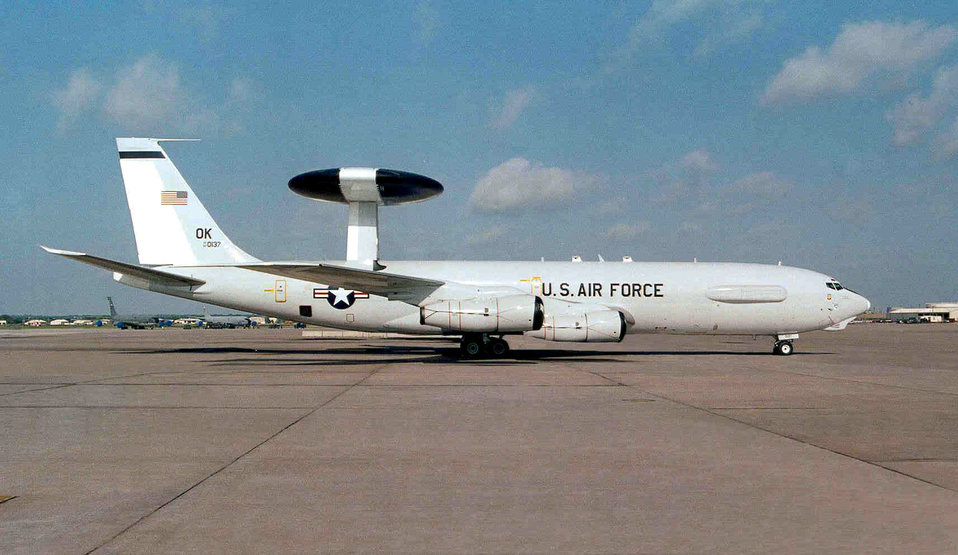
E-3 Sentry

FILE PHOTO -- The E-3 Sentry is a modified Boeing 707/320 commercial airframe with a rotating radar dome. The dome is 30 feet in diameter, 6 feet thick and is held 11 feet above the fuselage by two struts. It contains a radar subsystem that permits surveillance from the Earth's surface up into the stratosphere, over land or water. The radar has a range of more than 200 miles for low-flying targets and farther for aerospace vehicles flying at medium to high altitudes.